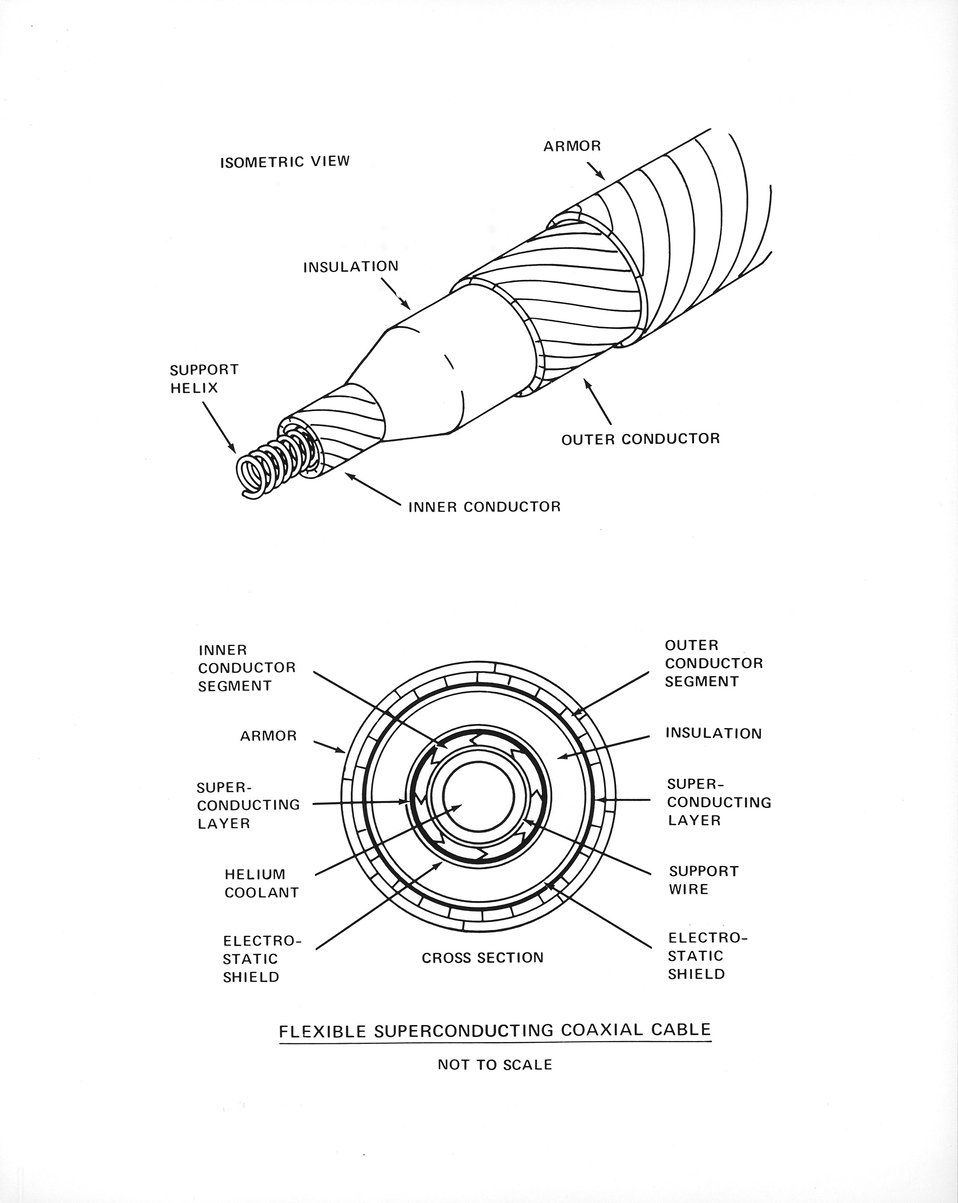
These diagrams show the various elements contained in an underground superconducting power transmission cable being developed by the Energy Research and Development Administration's Brookhaven National Laboratory, Upton, N.Y. c. 1973